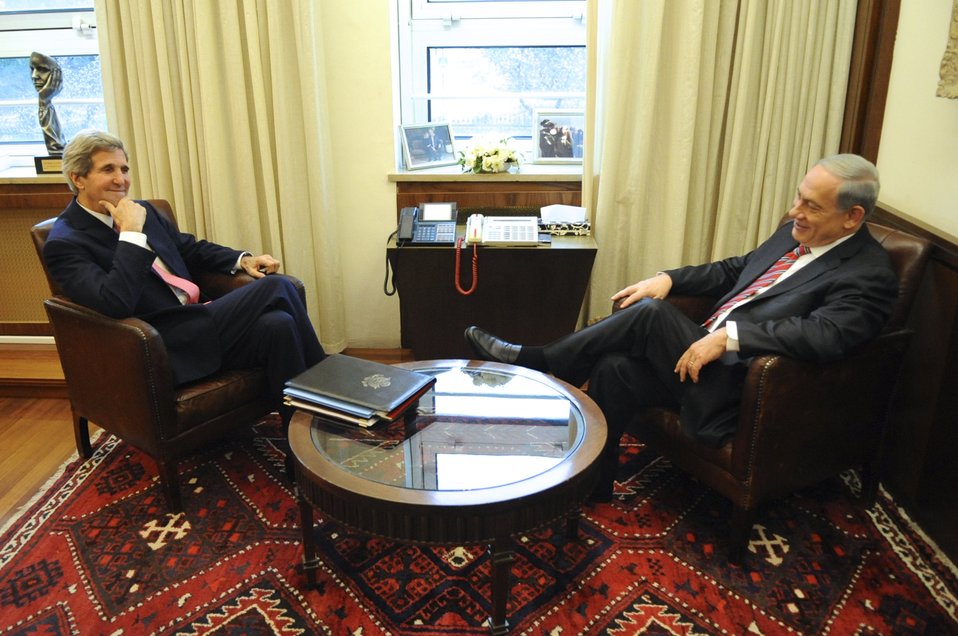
Secretary Kerry Meets With Prime Minister Netanyahu in Israel

U.S. Secretary of State John Kerry shares a laugh with Israeli Prime Minister Benjamin Netanyahu as the two settle in for a meeting in the Minister's private office in Jerusalem on Dec. 5, 2013.